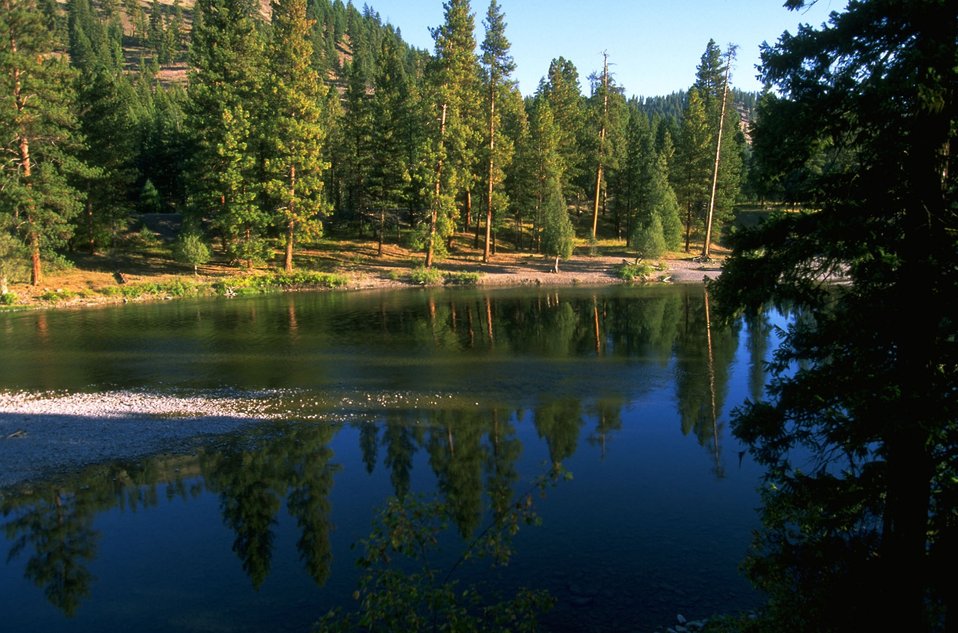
Red Rocks day-use area of Blackfoot River in the early morning